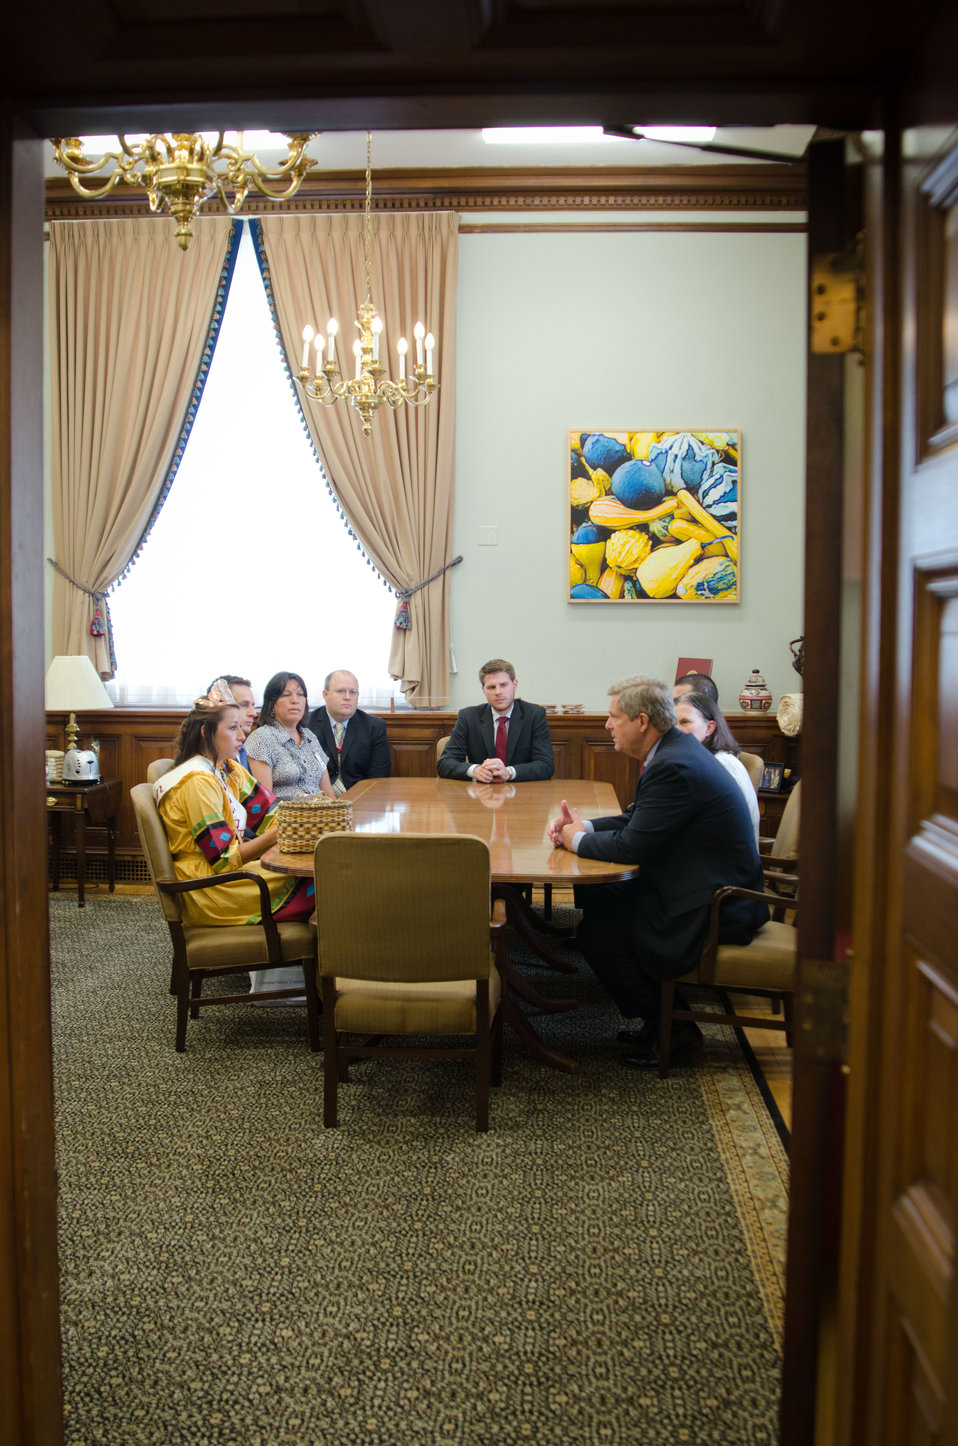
Miss Cherokee 2010-2011 Brooke Hudson (left) and officers of the Cherokee nation met with U.S. Department of Agriculture Secretary Tom Vilsack (right), Under Secretary for Food, Nutrition and Consumer Services Kevin Concannon, Under Secretary for Rural Development Dallas Tonsager, Agriculture Chief of Staff Krysta Harden; Senior Advisor to Agriculture Secretary Tom Vilsack with the USDA Office of Tribal Relations Janie Hipp and Agriculture Deputy Under Secretary for Food, Nutrition and Consumer Services Janey Thornton in Washington, DC, on Tuesday, August 9, 2011. During the meeting Miss Hudson presented Secretary Vilsack with a book that told of the 'Trails of Tears,' the relocation that included the movement of the Cherokee Nation in 1938 from the southeastern United States to Oklahoma. Hudson had completed a cycling journey along the same route. The trip took her more then 20 days to complete. She told of how the experience was both physically and emotionally demanding.